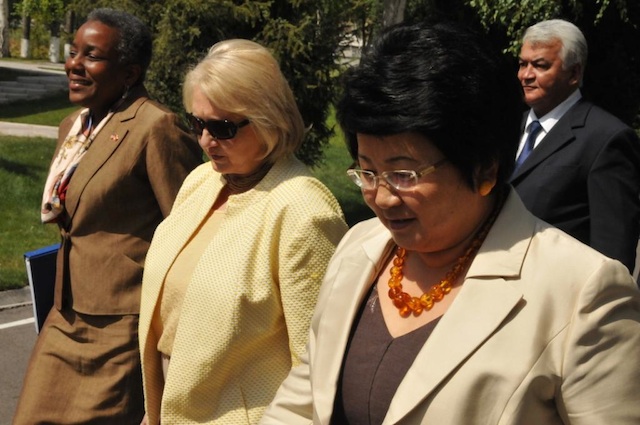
Ambassadors Spratlen and Verveer Walk With Kyrgyz Republic President Otunbayeva

U.S. Ambassador to the Kyrgyz Republic Pamela Spratlen, left; U.S. Ambassador-at-Large for Global Women’s Issues Melanne Verveer, center; and Kyrgyz Republic President Roza Otunbayeva, right; walk to a meeting on U.S.-Kyrgyz Republic issues in Bishkek, Kyrgyzstan, on July 18, 2011.